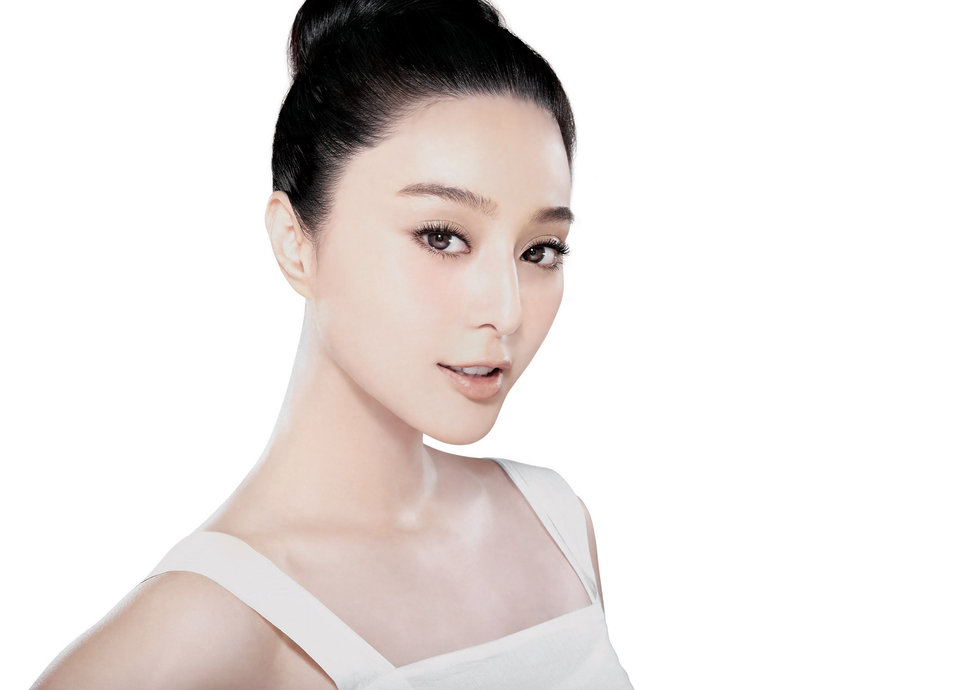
Thailand girl in picture.